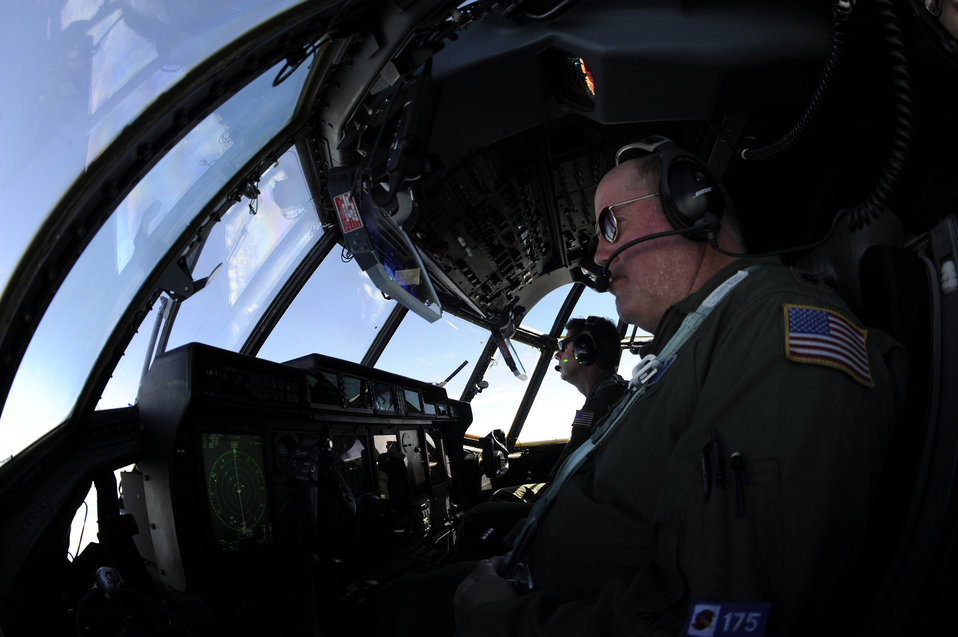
Airmen prep for upcoming hurricane season

Lt. Col. Roger Gardner and Maj. Scot Salminen fly a Hurricane Hunter WC-130J Hercules during a training mission June 7 to Homestead Air Reserve Base, Fla., from St. Croix, V.I. Colonel Gardner is the aircraft commander and Major Salminen is chief of training for the 403rd Operations Support Squadron. The training mission covered the Air Force Reserve Command's weather reconnaissance mission as they enter hurricane season, which began June 1.